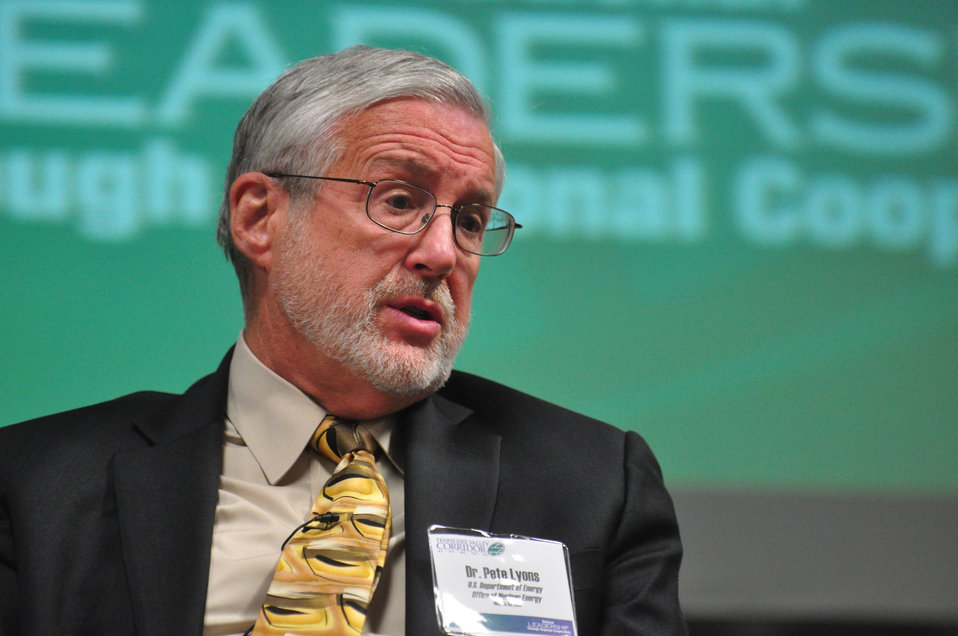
Dr. Pete Lyons DOE Tennessee Valley Corridor Summit Oak Ridge

13-062 DOE photo Lynn Freeny 5-29-2013 Oak Ridge Tennessee